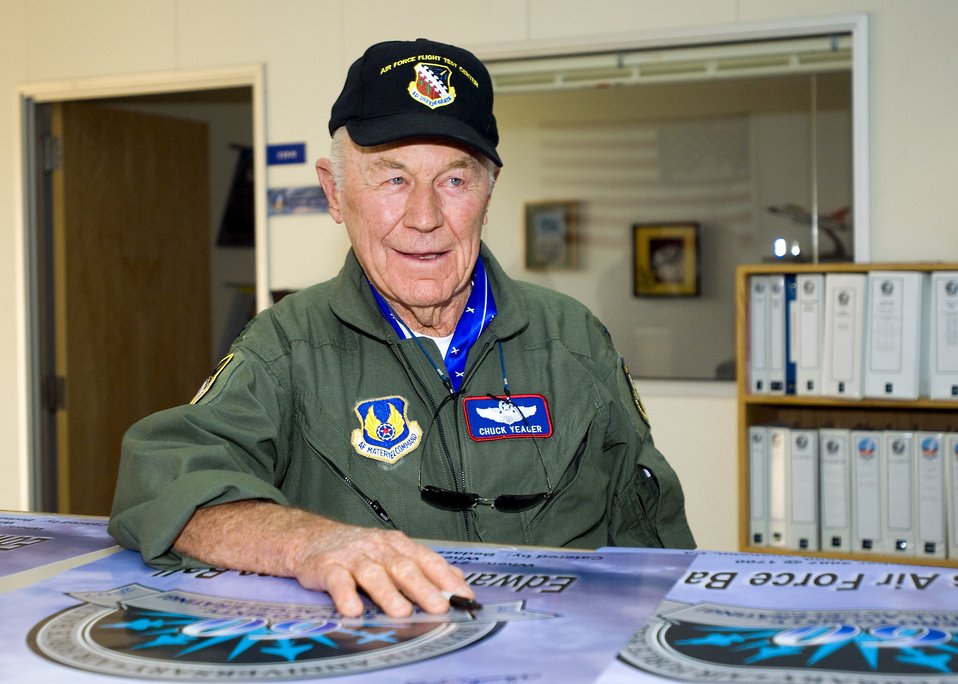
First Mach flight propels Yeager, Air Force into history

Retired Brig. Gen. Chuck Yeager pauses for a moment while autographing several posters at Edwards Air Force Base, Calif. General Yeager became the first man to fly faster than the speed of sound in level flight on October 14, 1947.